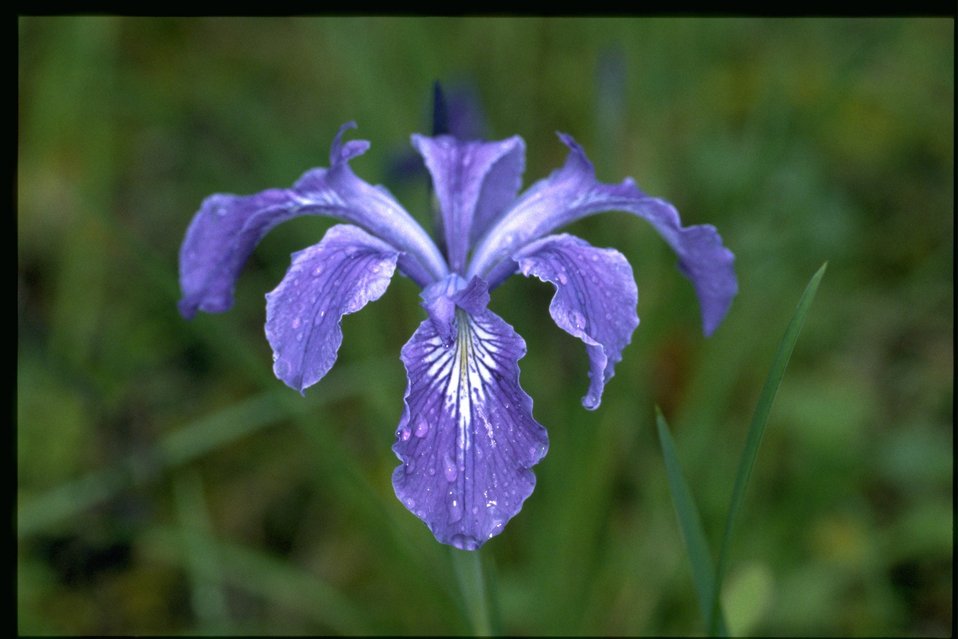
Closeup shot of Iris tenax.